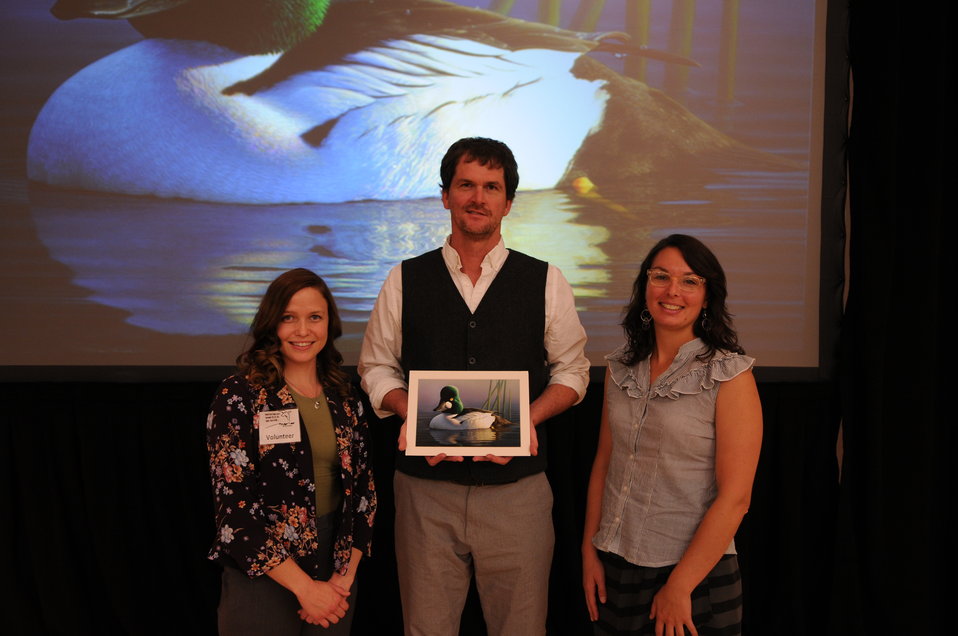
Everyone Loves a Winner

The U.S. Fish & Wildlife Service sponsored the 2012 Federal Duck Stamp Art Contest September 28 and 29 in Ogden, Utah, at Weber State University. A panel of five judges was responsible for choosing the art work used to design the 2013-2014 Migratory Bird Hunting and Conservation Stamp.